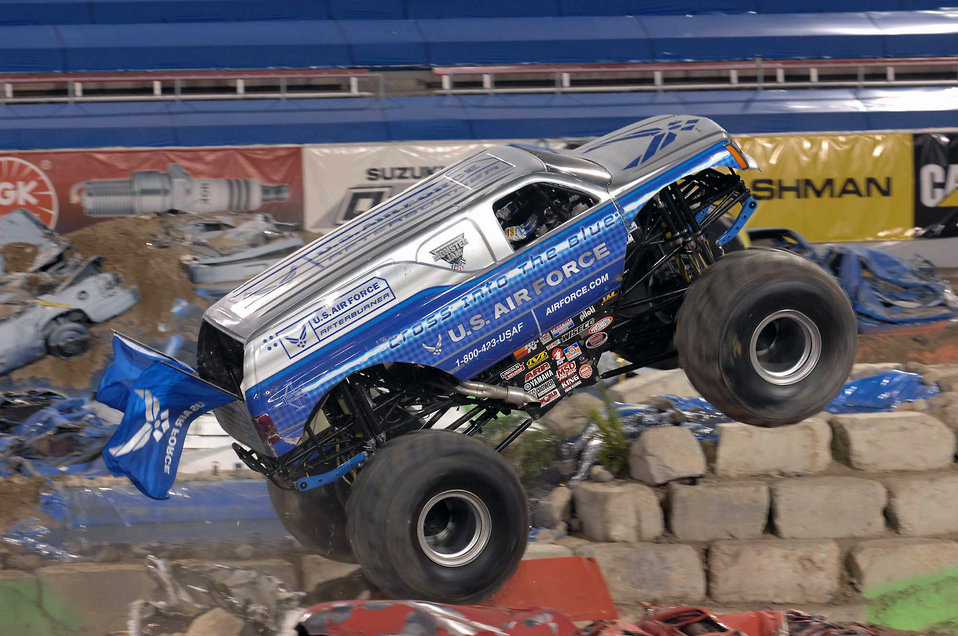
Air Force monster truck wows Las Vegas crowd

Damon Bradshaw drives the Air Force Afterburner monster truck through the obstacle course March 29 at the Monster Jam World Finals in Las Vegas, Nev.